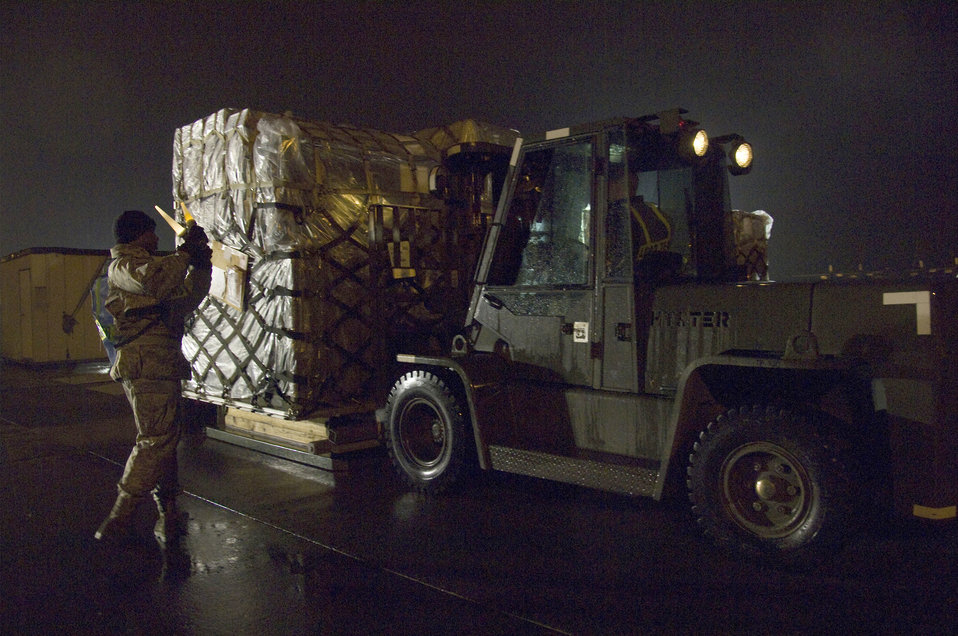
Readiness exercise

Airman 1st Class Jarrett Hunt guides a forklift carrying a medical cargo pallet during an operational readiness exercise March 7, 2011, at Yokota Air Base, Japan. Airmen from the 374th Maintenance Squadron moved multiple pallets of essential cargo during the exercise to ensure mission readiness. Airman Hunt is an aerospace propulsion apprentice assigned to the 374th MXS.